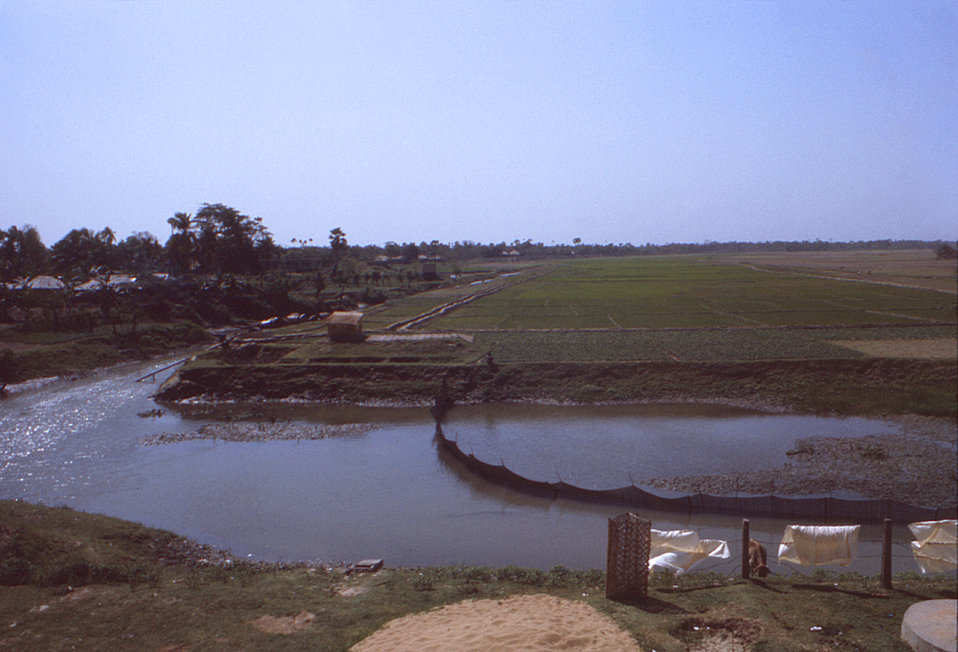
Photographed sometime in the early 1970s, during the worldwide smallpox eradication campaign, this image depicted a number of rice paddies located at the Cholera Lab in Matlab, Bangladesh.